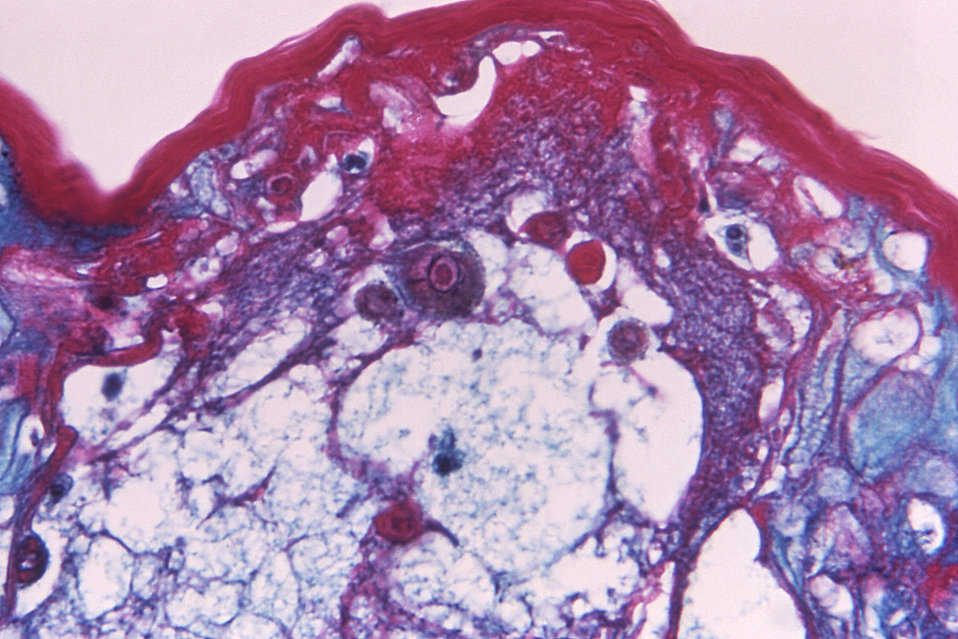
Under a relatively low magnification of 500X, this photomicrograph reveals some of the cytoarchitectural histopathologic changes which you'd find in a human skin tissue specimen that included a chickenpox, or varicella zoster virus lesion.